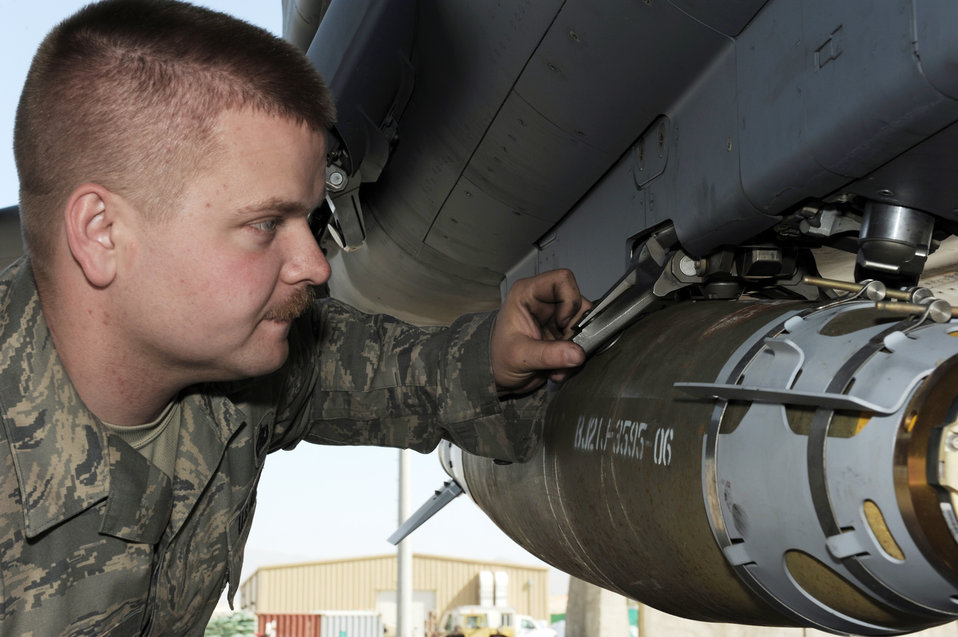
Airman's vigilance prevents aircraft mishap

Staff Sgt. Justin Wilson inspects the bomb rack of an F-15E Strike Eagle during a preflight aircraft inspection March 16, 2010, at Bagram Airfield, Afghanistan. Sergeant Wilson is a 494th Aircraft Maintenance Unit crew chief deployed from Royal Air Force Lakenheath, England, and is a native of Malone, N.Y.